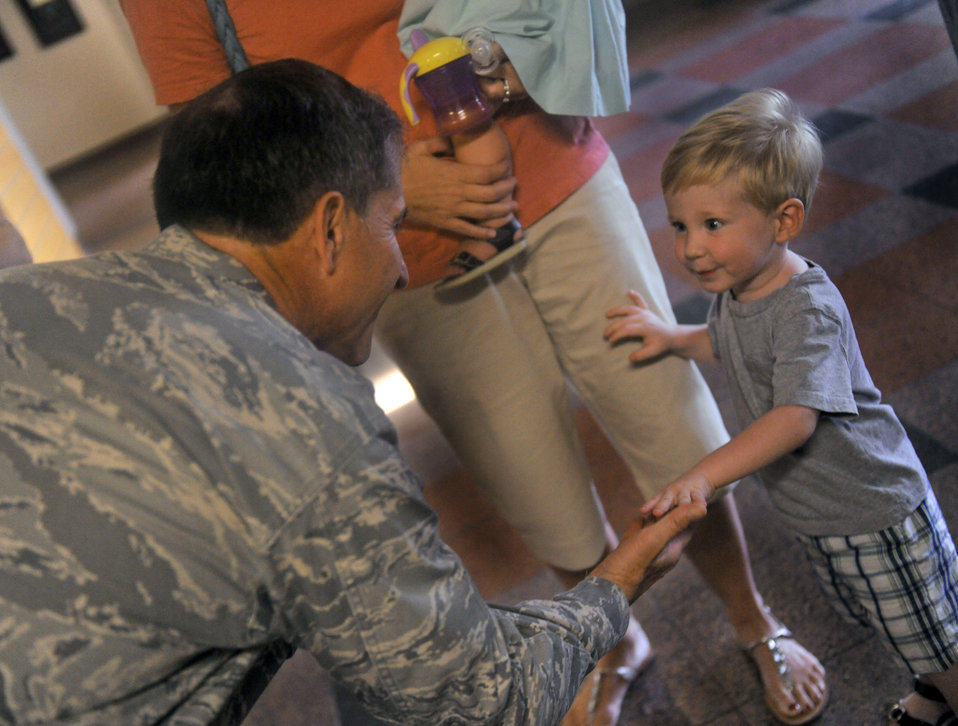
A close call to remember

Maj. Gen. David Goldfein gives a high five to Noah Kunkel, the son of Lt. Col. Tom Kunkel, Sept. 1, 2010, during a visit to Moody Air Force Base, Ga. General Goldfein was rescued by Colonel Kunkel when his aircraft was shot down over enemy territory in May 1999. General Goldfein is the Air Combat Command director of air and space operations. Colonel Kunkel is the 41st Rescue Squadron commander.